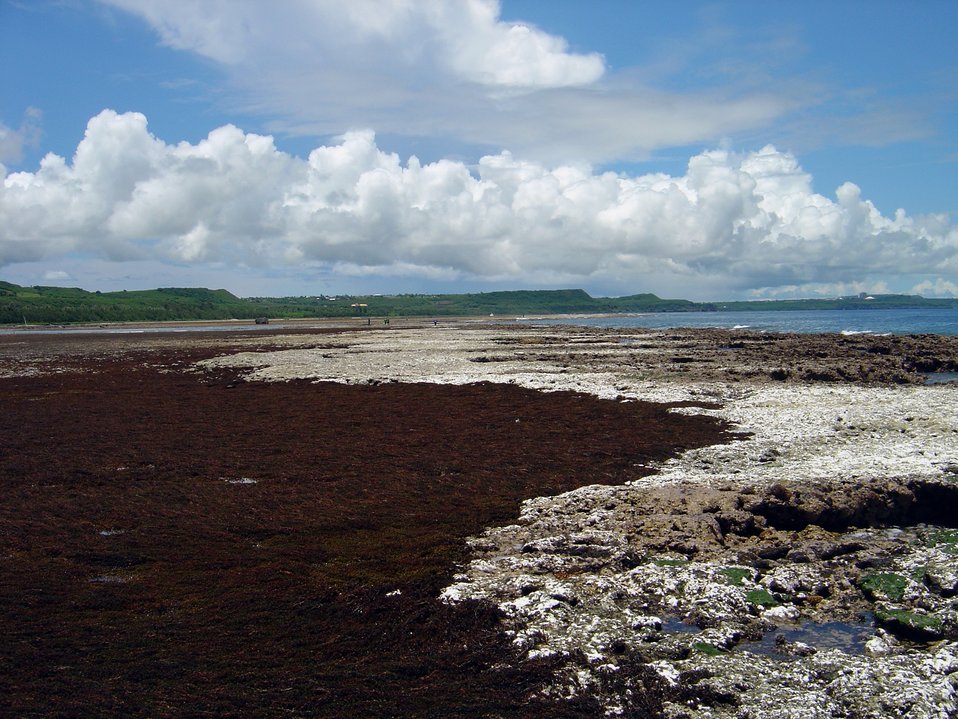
Uncovered reef flat with area of brown algae at low tide on the Guam coastline.